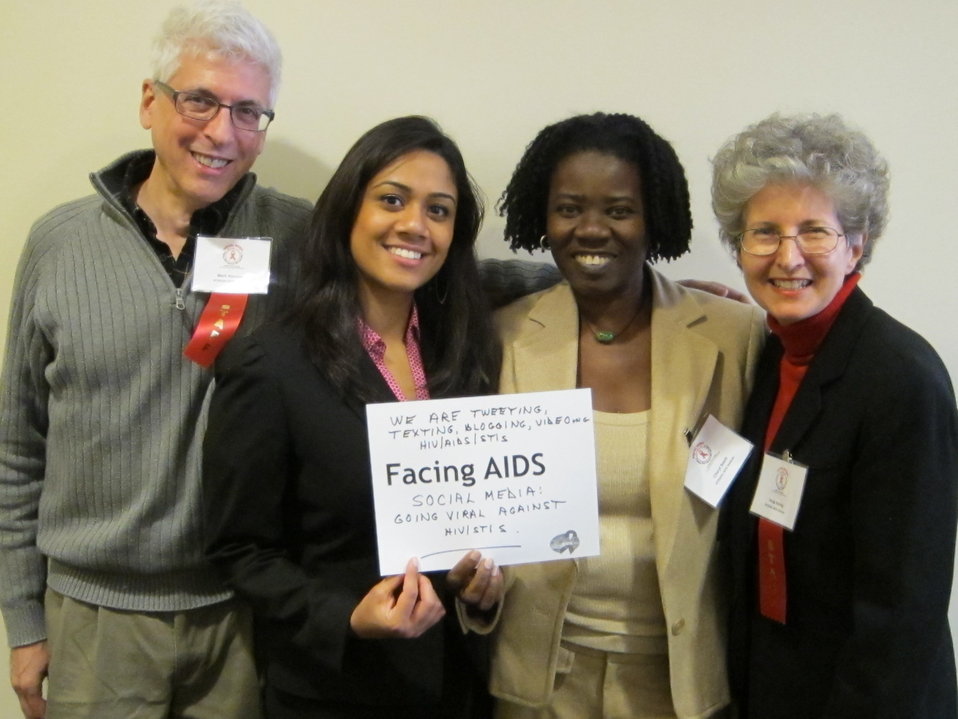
We are tweeting, texting, blogging, video-ing HIV/AIDS/STIs Facing AIDS Social Media Going Viral Against HIV/STIs.